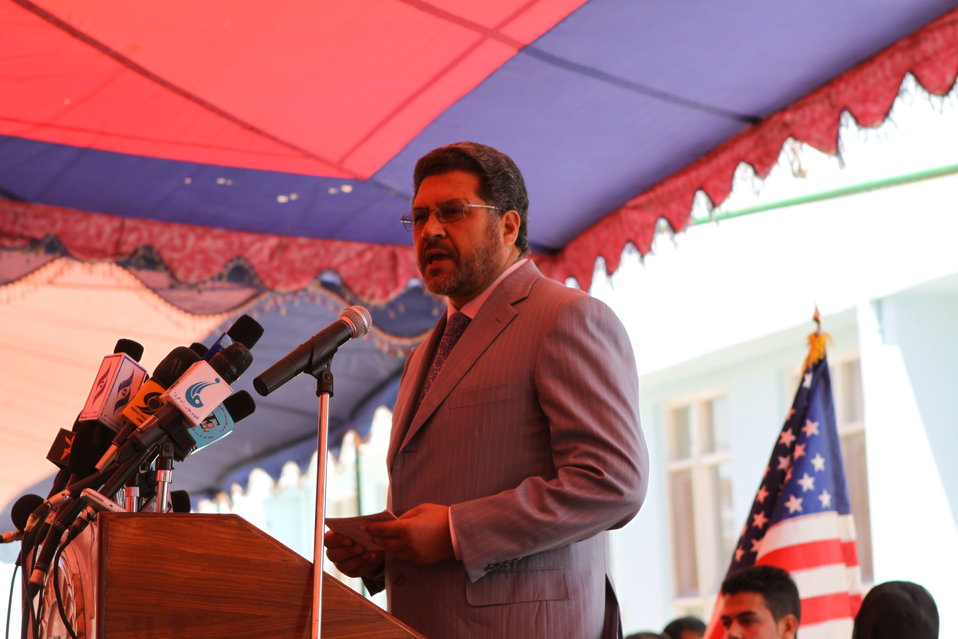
100522 ATVI Graduation 076